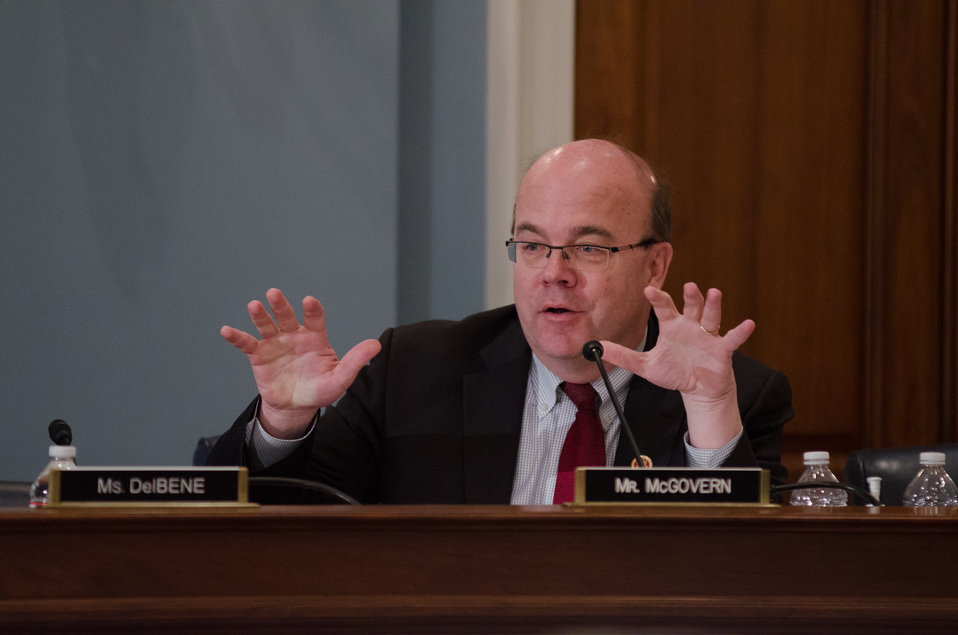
Representative Jim McGovern (MA) questions Agriculture Secretary Tom Vilsack, not seen, during testimony before the House Agriculture Committee regarding the “State of the Rural Economy“ at the Longworth House Office Building in Washington, D.C. on Tuesday, Mar. 5, 2013.